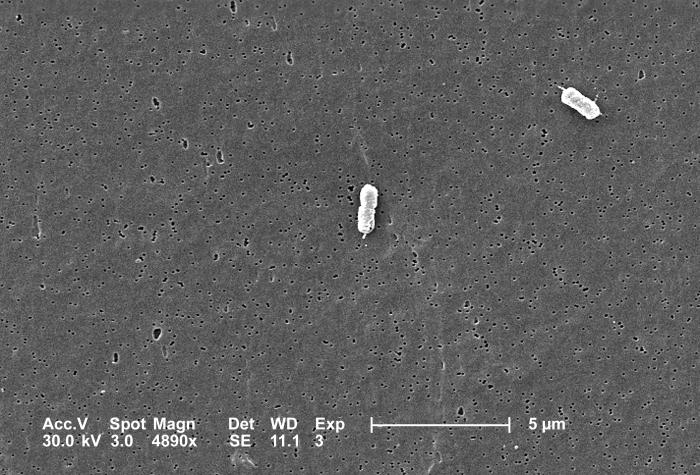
This scanning electron micrograph (SEM) depicts two Escherichia coli bacteria, clearly displaying one or more peritrichous flagella, i.e., flagella that may originate from anywhere on the bacterium's cell wall surface.; Magnification 4890x.